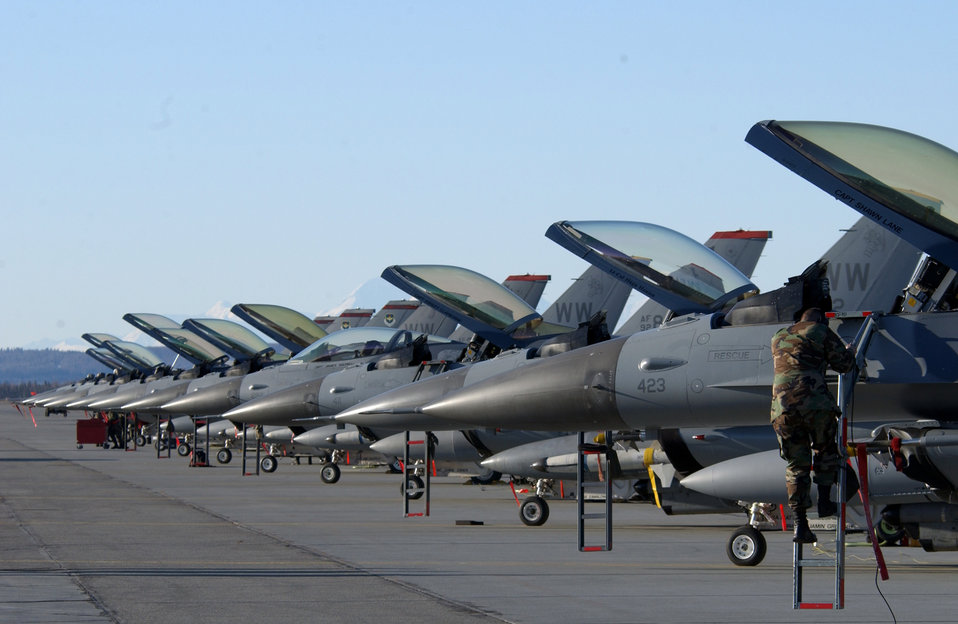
Bird line

EIELSON AIR FORCE BASE, Alaska -- Airman 1st Class George Zawalonka inspects an F-16 Fighting Falcon during preflight operations supporting Exercise Cope Thunder 05-1 here April 25. Cope Thunder is a joint/combined air training exercise with the purpose of providing pilots with a real combat training environment. Airman Zawalonka is a crew chief with the 35th Fighter Wing at Misawa Air Base, Japan.